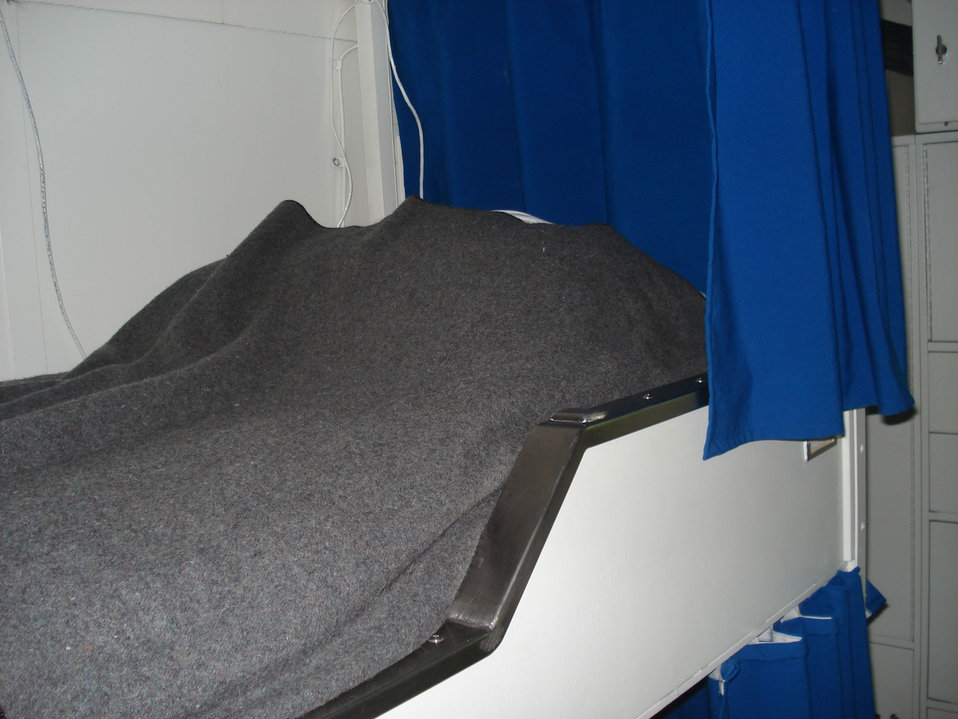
Here we see a bunk in a 4-man cabin located in the officer's berthing on the USS Kearsarge (LHD 3), which is an amphibious assault ship that was supporting the Caribbean phase of operation Continuing Promise 2008, an equal-partnership mission between the United States, Canada, the Netherlands, Brazil, Nicaragua, Panama, Colombia, Dominican Republic, Trinidad and Tobago and Guyana.